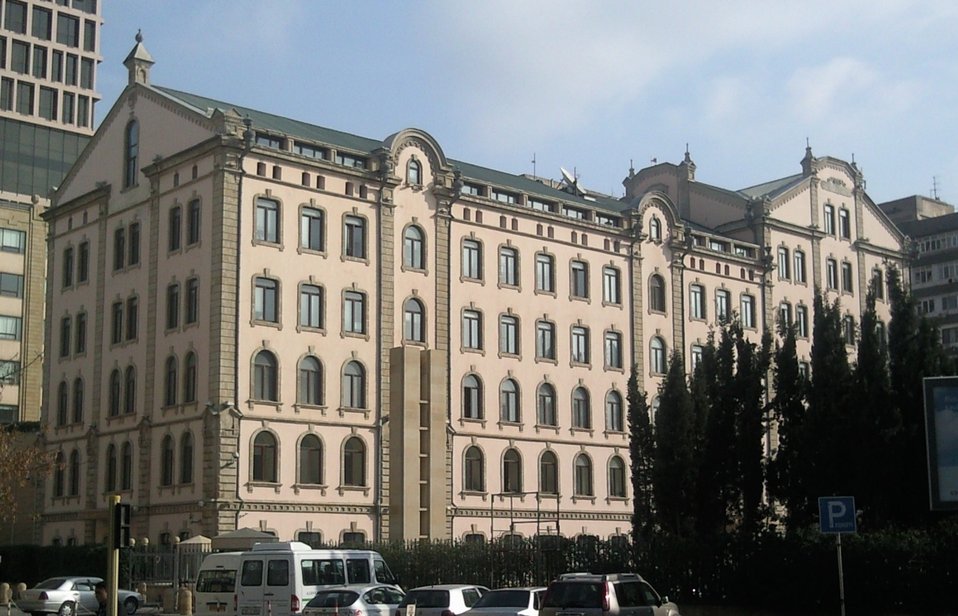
'Landmark' office center in Baku, was built in XIX century.